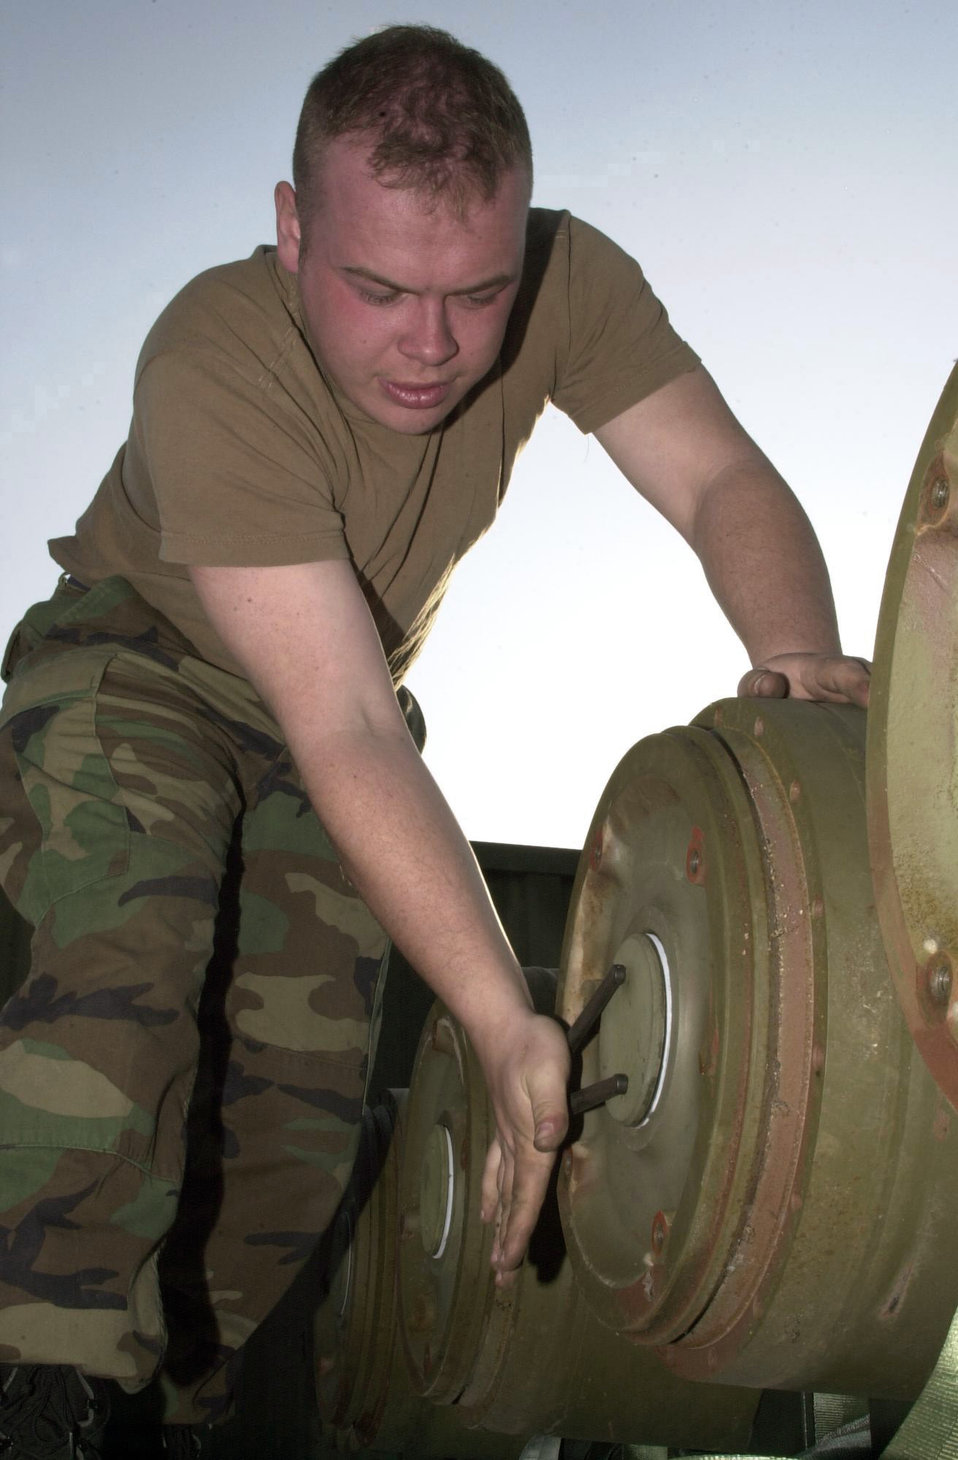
Vader

OPERATION IRAQI FEEDOM -- Senior Airman Josh Vader, from the 5th Expeditionary Maintenance Squadron's munitions flight, prepares an MK-84